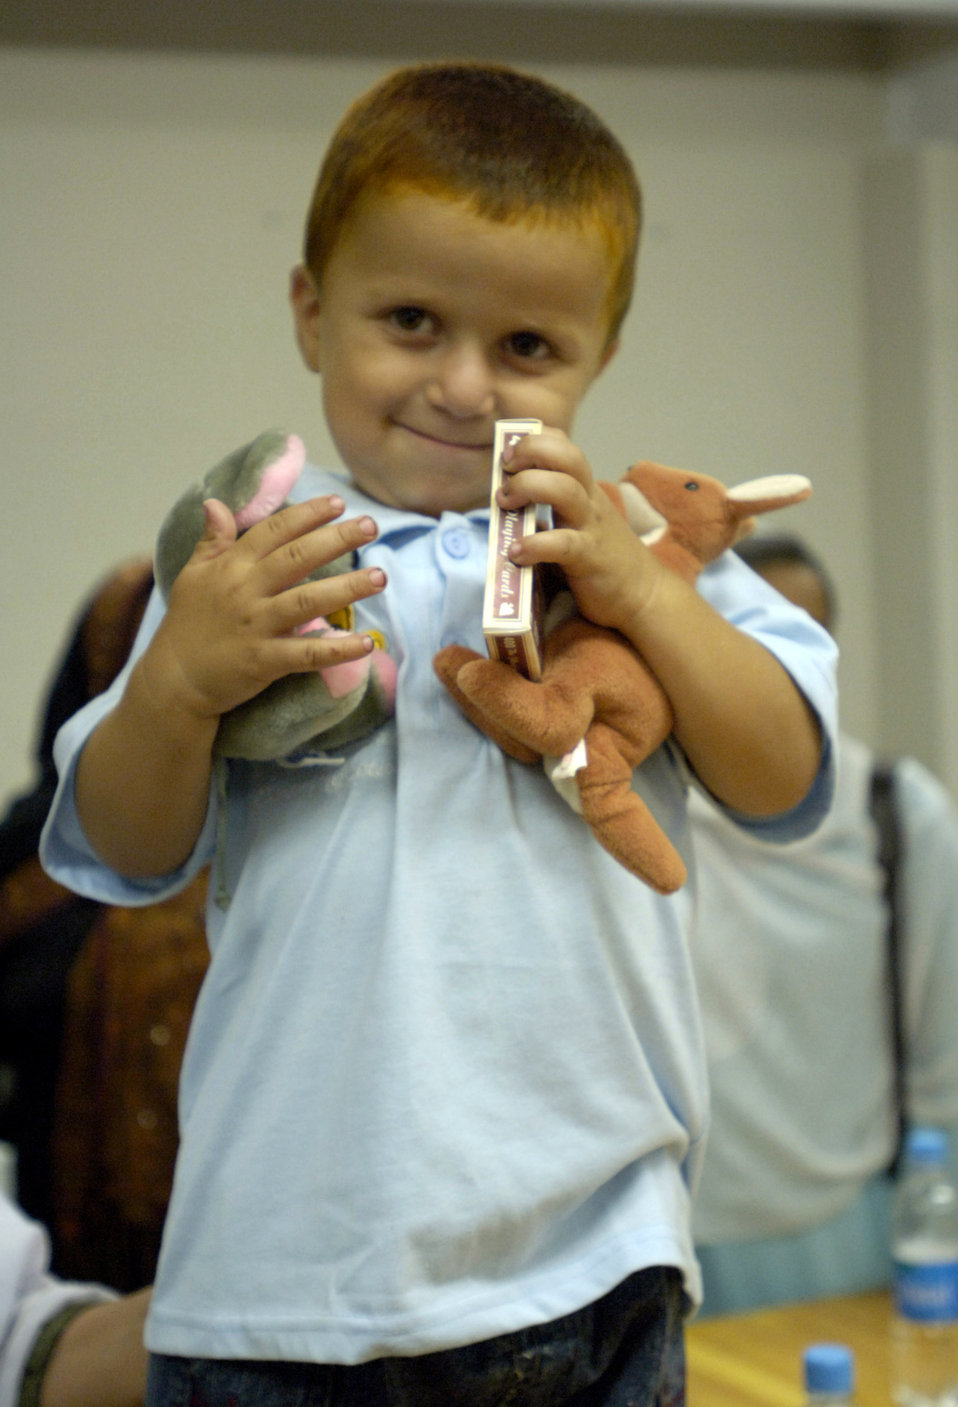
American, Afghan women join together for tea, discussion

An Afghan child shows off gifts given to him during an afternoon tea Sept. 5 at Forward Operating Base Mehtar Lam, Afghanistan. Female Airmen and Soldiers assigned to the Laghman Provincial Reconstruction Team hosted the tea for influential Afghan women living throughout Afghanistan's Laghman province.